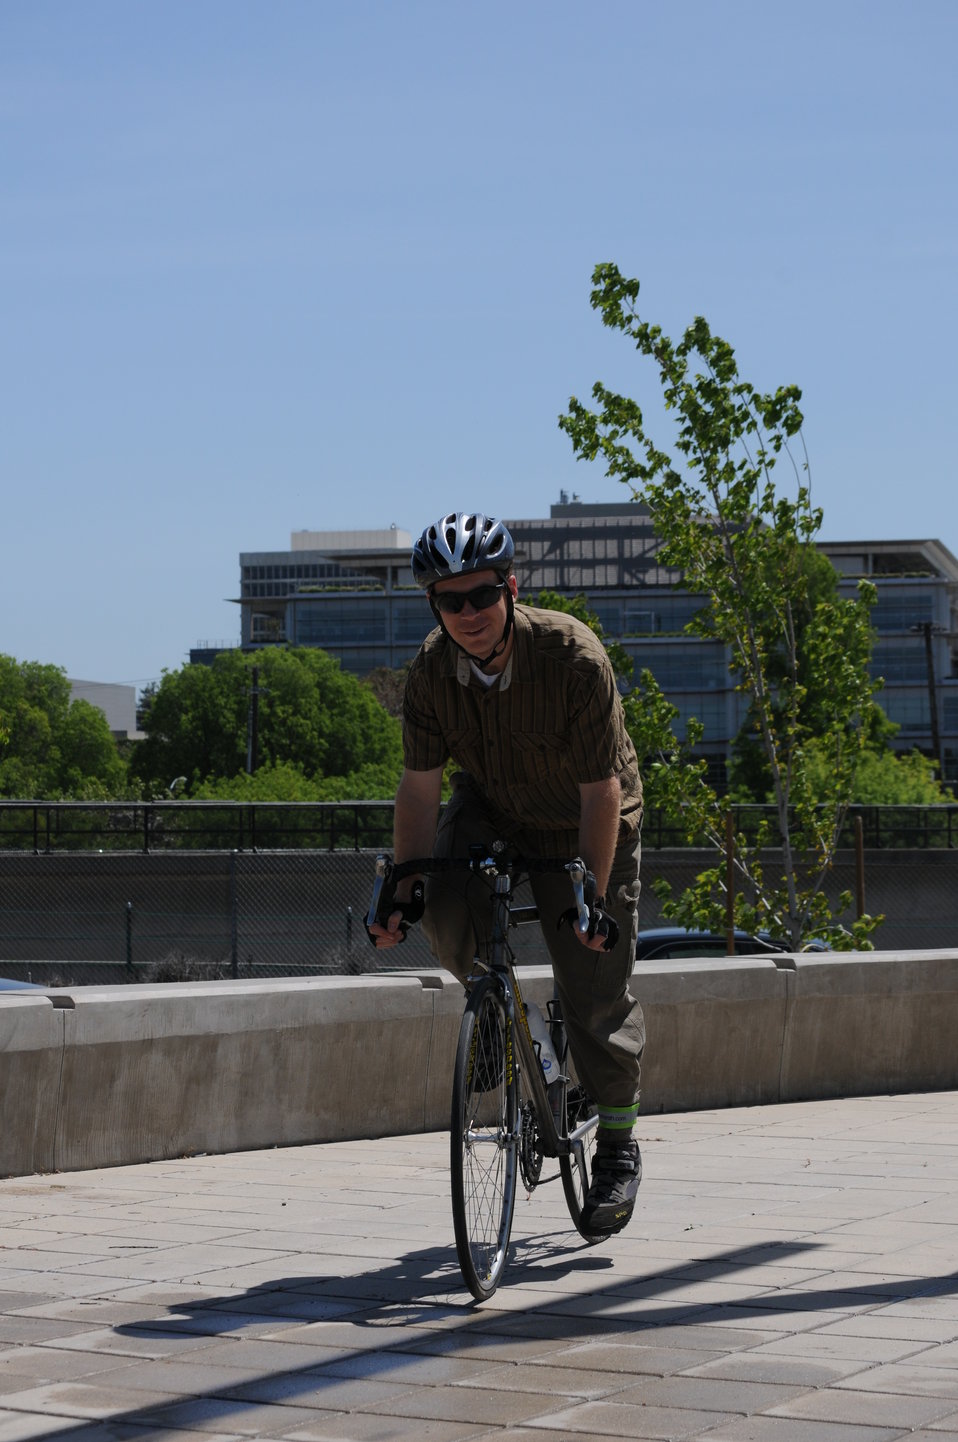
Sacramento District - 2011 bike friendly workplace

SACRAMENTO, Calif. -- U.S. Army Corps of Engineers Sacramento District regulatory project manager Zach Simmons returns to his office after accepting an award recognizing the district as a 2011 bike-friendly workplace by the Sacramento Area Council of Governments at a May is Bike Month kickoff event here May 2. Simmons pledged to bike 250 miles to help the district reach its current goal of nearly 5,000 miles in the month of May.